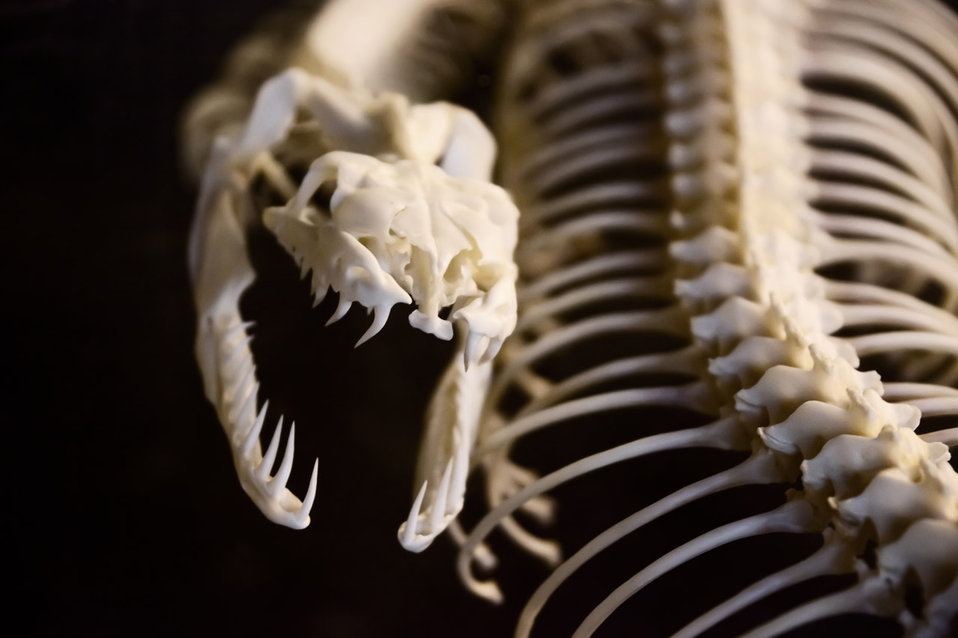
Snake skeleton on dark background.